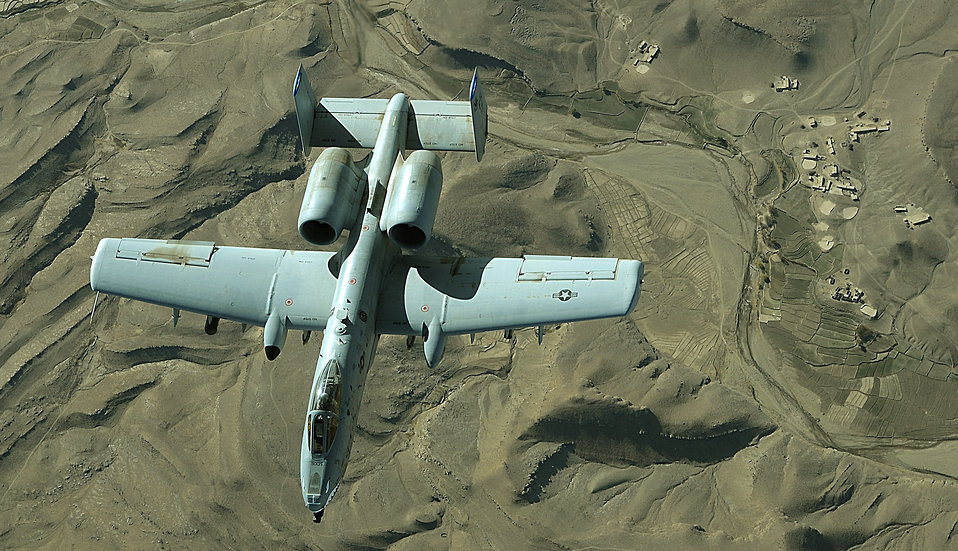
Dec. 23 airpower summary: A-10s provide top cover

An A-10 Thunderbolt II provides top cover over Afghanistan in support of coalition ground forces. A-10s conduct shows of force to deter enemy activities and provide armed aerial overwatch.